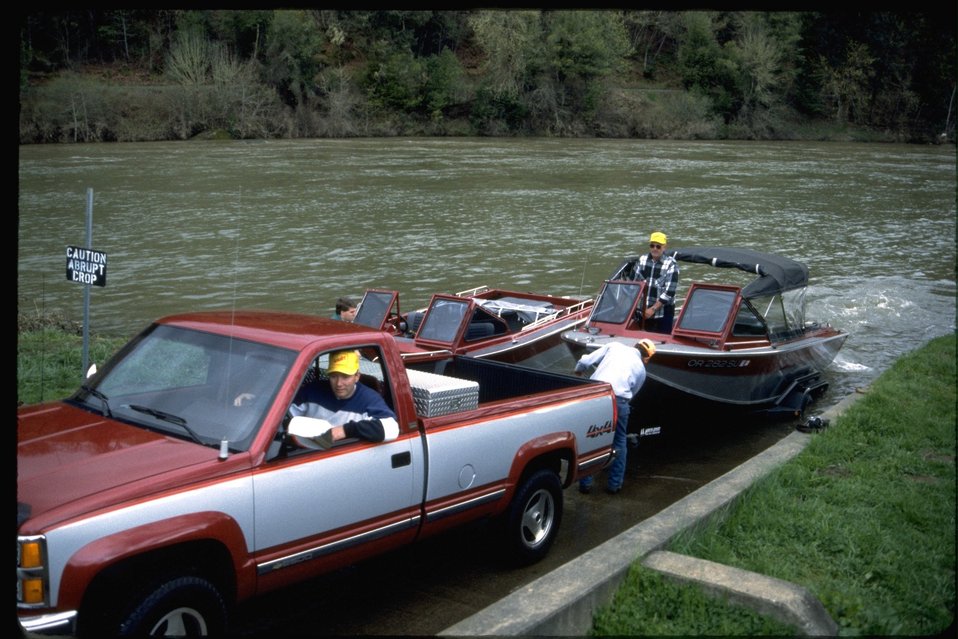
Loading up a boat at the dock.